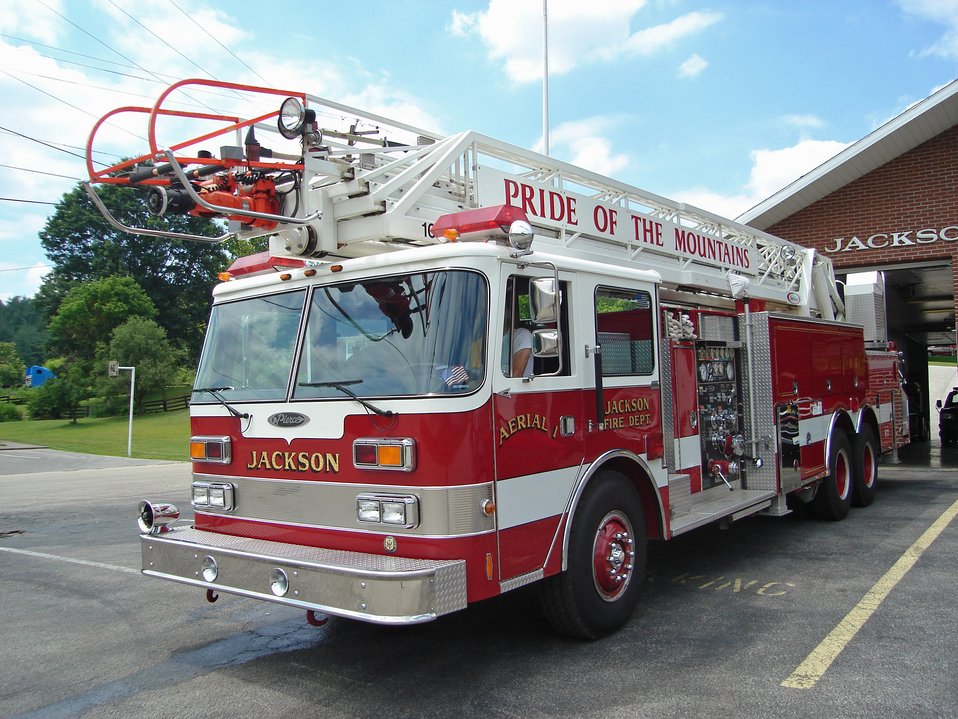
Aerial 1 serving the Jackson Fire Department, KY. 1988 Pierce Arrow 105' canopy cab